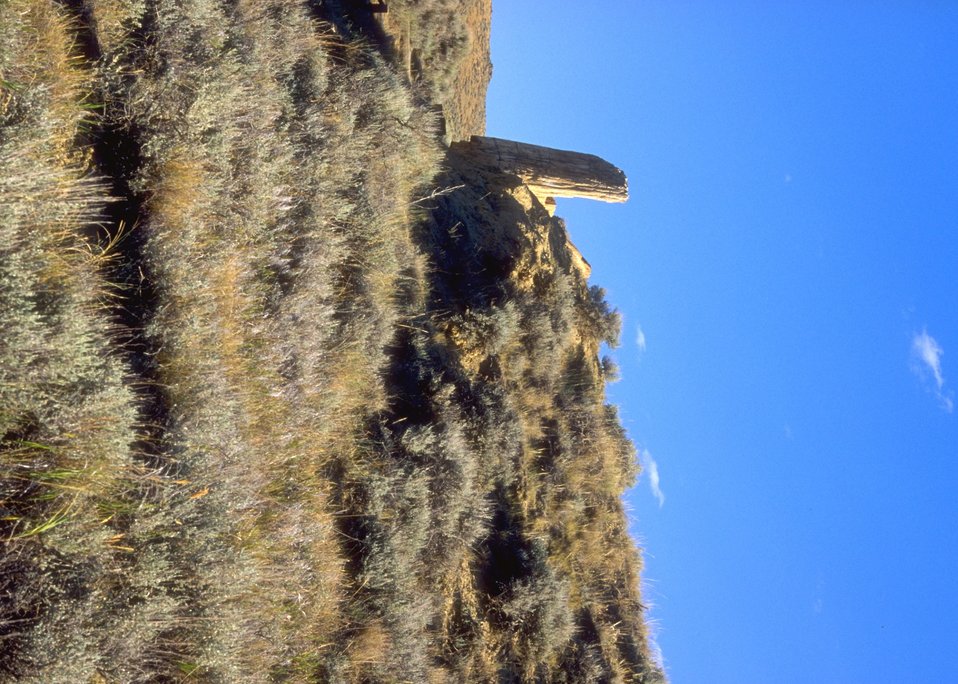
Dry Creek Petrified Tree Area, Buffalo Field Office.